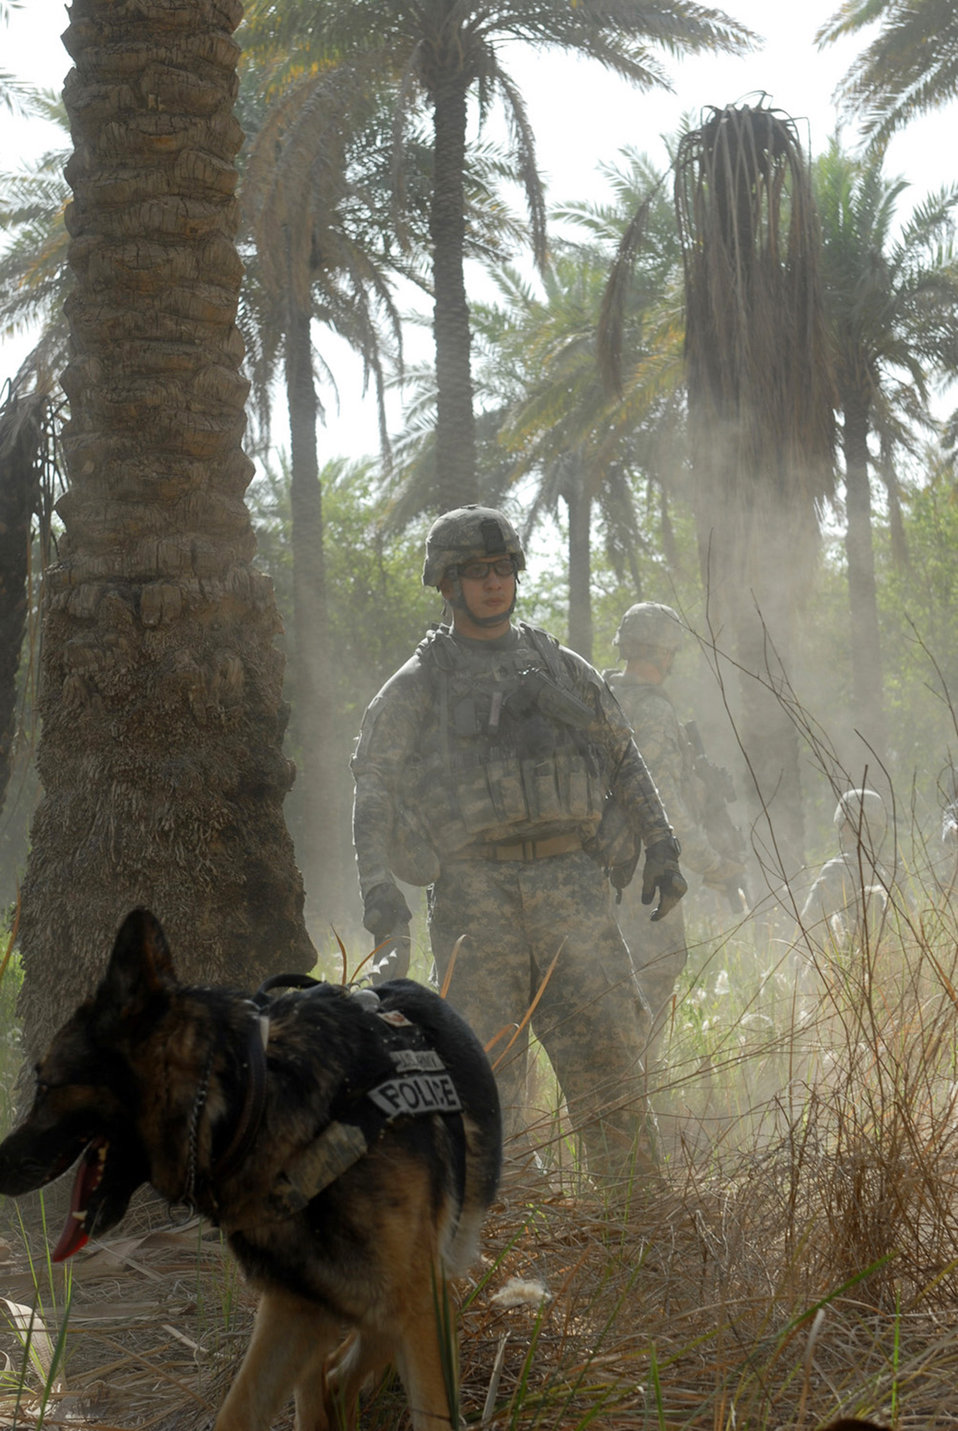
Military working dogs supplement sweep operation

Brush and plants make for difficult terrain as Army Staff Sgt. Marcelo Figueroa, assigned to the provost marshall's office at Camp Victory in Baghdad, and his German Shepherd Lasso, participate in a clearing operation June 13 in nearby Doura. Sergeant Figueroa is with the North Carolina National Guard's Company A, 252nd Combined Arms Battalion, 30th Heavy Brigade Combat Team.